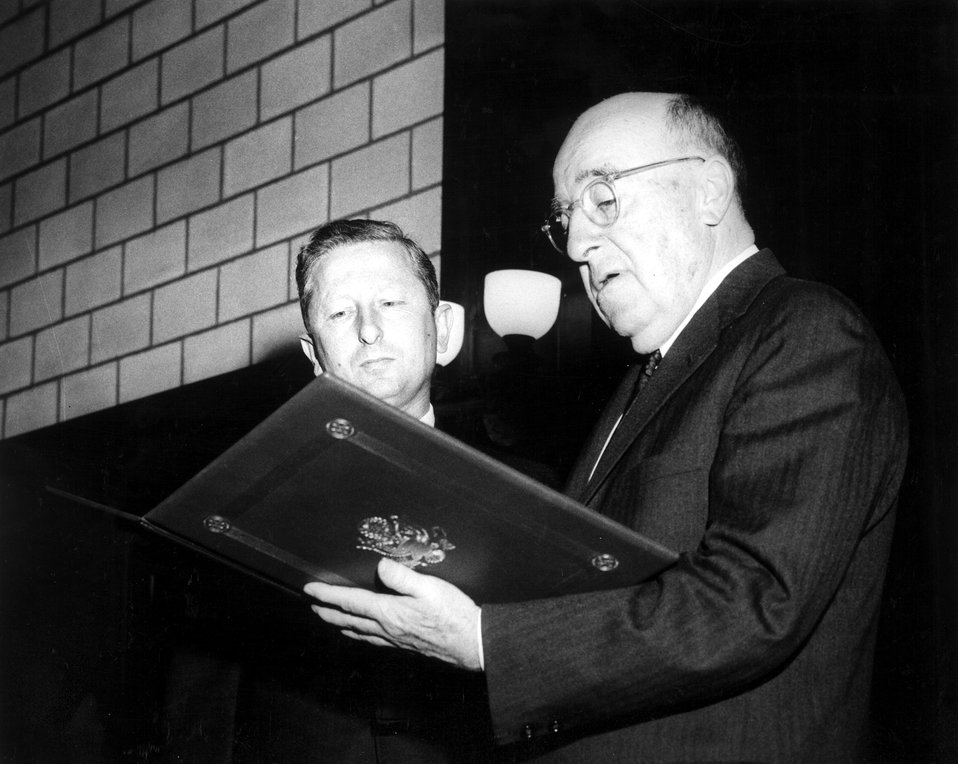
Dr. Wilson, Dr. Rosen. ERNEST O. LAWRENCE AWARD - 1963. National Academy of Sciences, April 25, 1963.